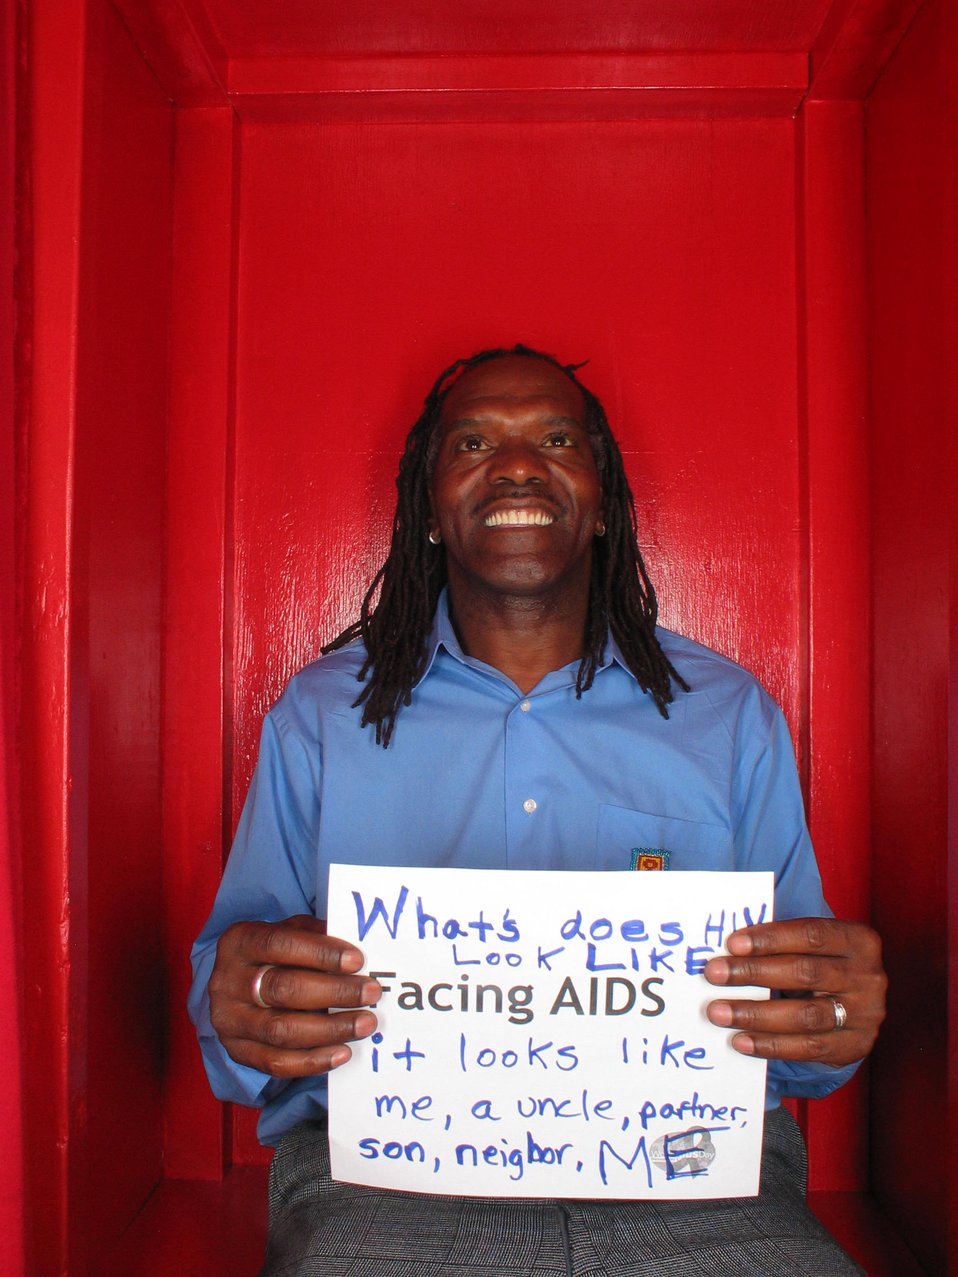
What does HIV look like? Facing AIDS it looks like me, a uncle, son, neighbor. ME.